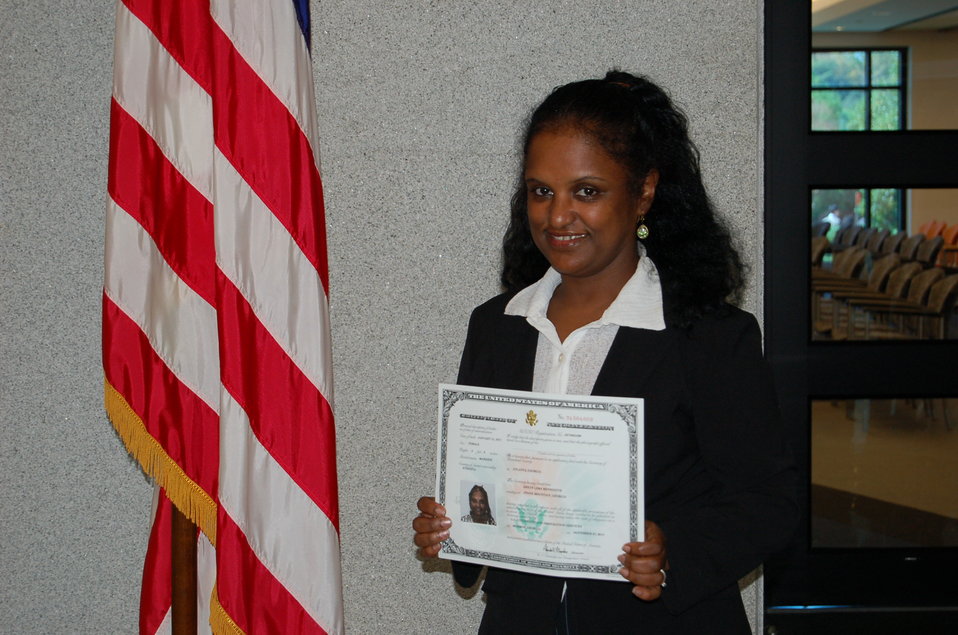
New Citizens